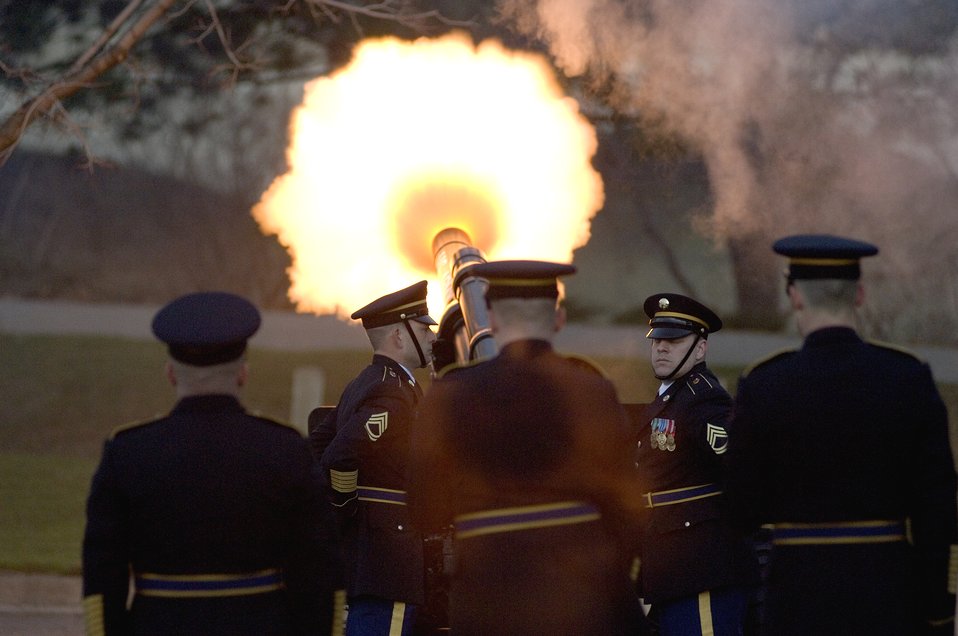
Honor Guard gives President Ford final honors

The 1st Battalion of the Michigan National Guard's 119th Field Artillery Regiment fires off a canon during the 21-gun salute to honor President Gerald R. Ford at the Gerald R. Ford Presidential Library and Museum Jan. 3 in Grand Rapids, Mich.